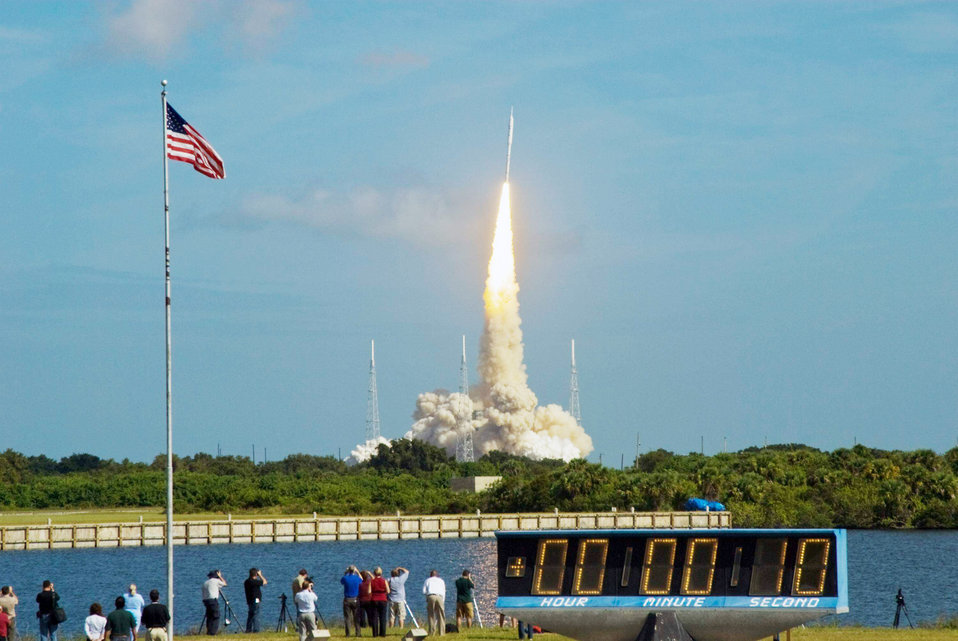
Ares I-X test rocket launched

The stars and stripes on the American flag reflect NASA's commitment to teamwork as the Constellation Program's Ares I-X test rocket roars off Launch Complex 39B Oct. 28, 2009, at NASA's Kennedy Space Center in Florida.